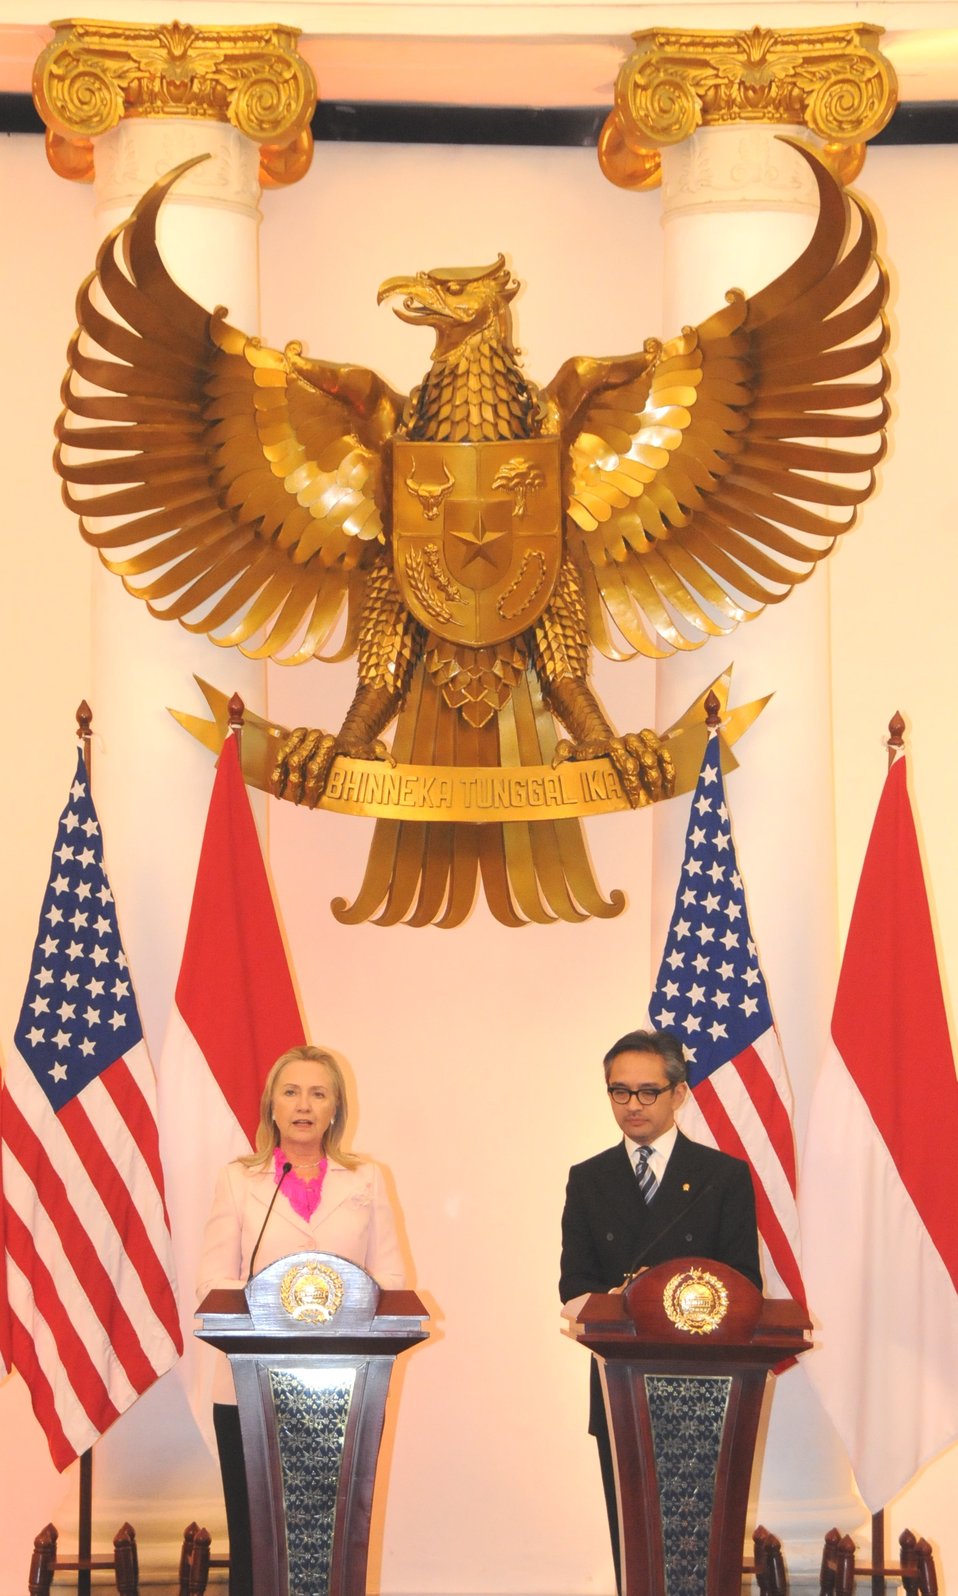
Secretary Clinton With Foreign Minister Natalegawa in Indonesia

U.S. Secretary of State Hillary Rodham Clinton delivers remarks with Indonesian Foreign Minister Raden Mohammad Marty Muliana Natalegawa during a press conference after their meeting in Jakarta, Indonesia, September 3, 2012.